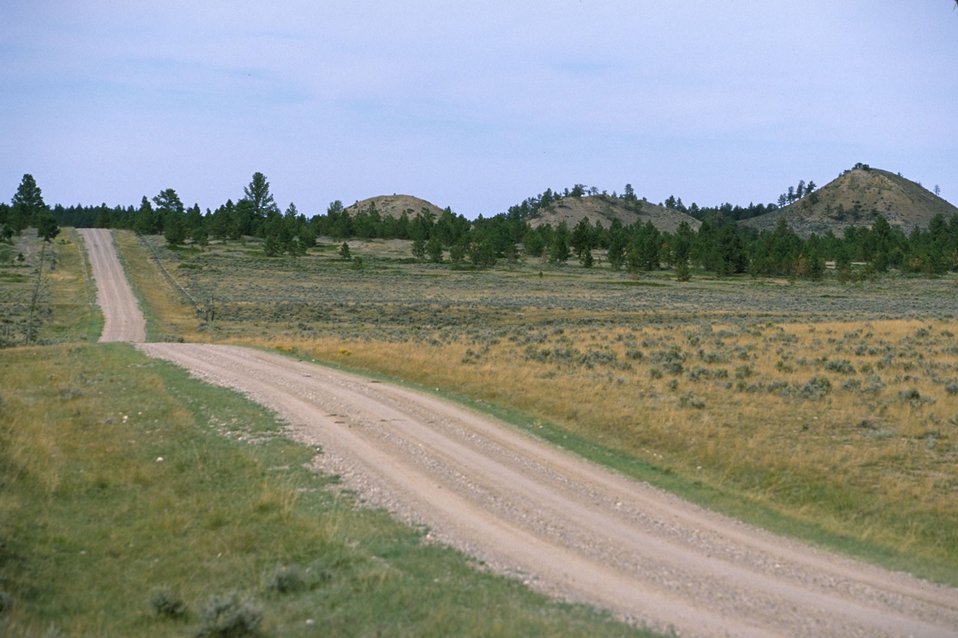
Acid Shale Area of Critical Environmental Concern (ACEC) with road